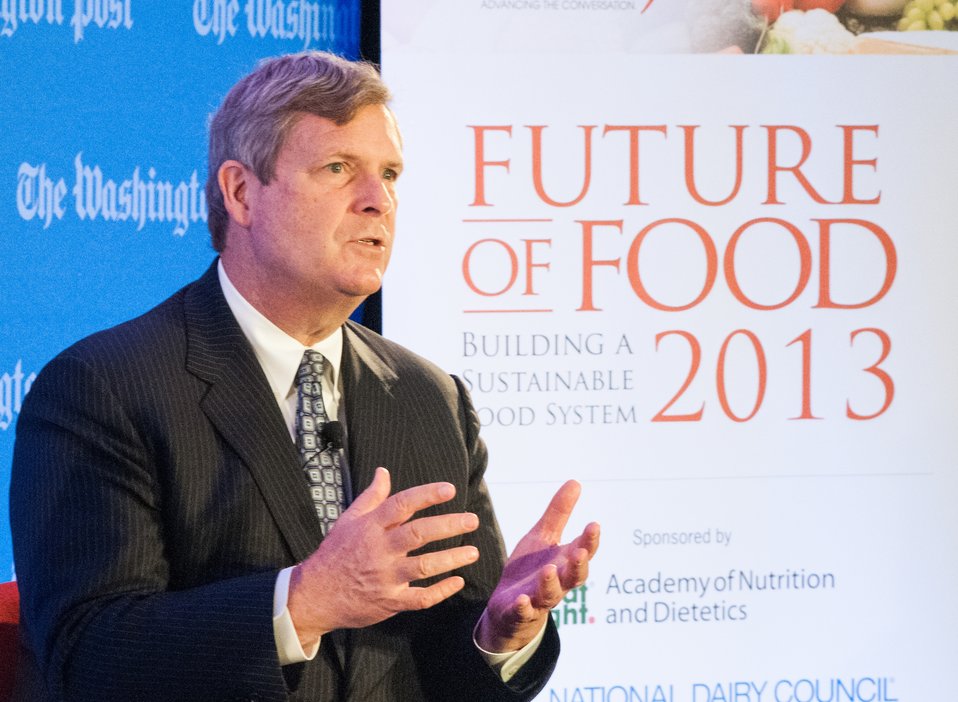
Agriculture Secretary Tom Vilsack and leading agricultural, government and nutrition experts discuss expanding healthy, sustainable food systems during the annual live forum, “Future of Food: Building a Sustainable Food System 2013,” sponsored by the Washington Post in Washington, D.C. on Wednesday, May 22, 2013. The discussion included public-private partnerships, the market’s role in nutrition and the future of agricultural innovation.